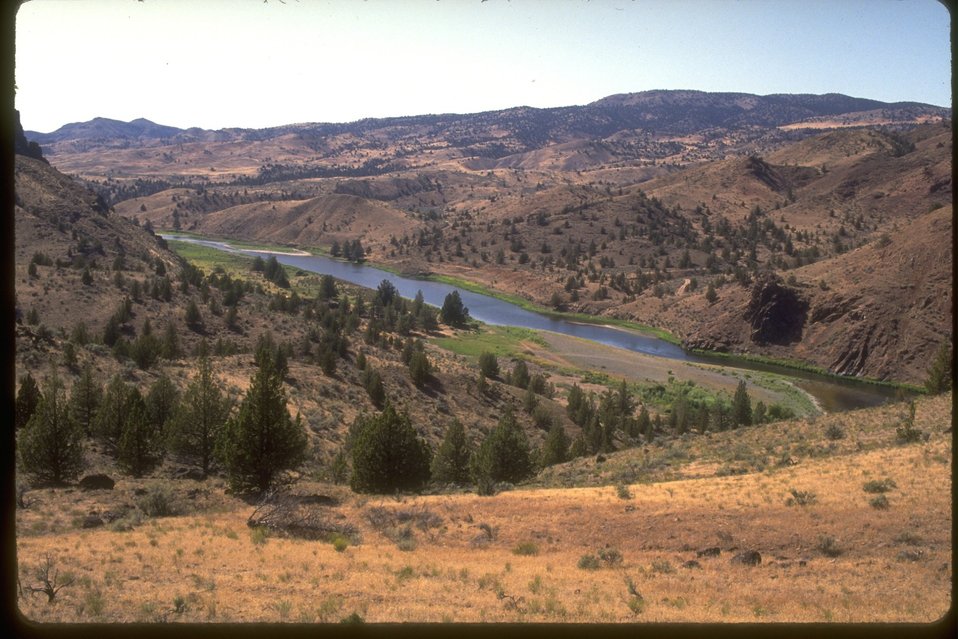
John Day River area.